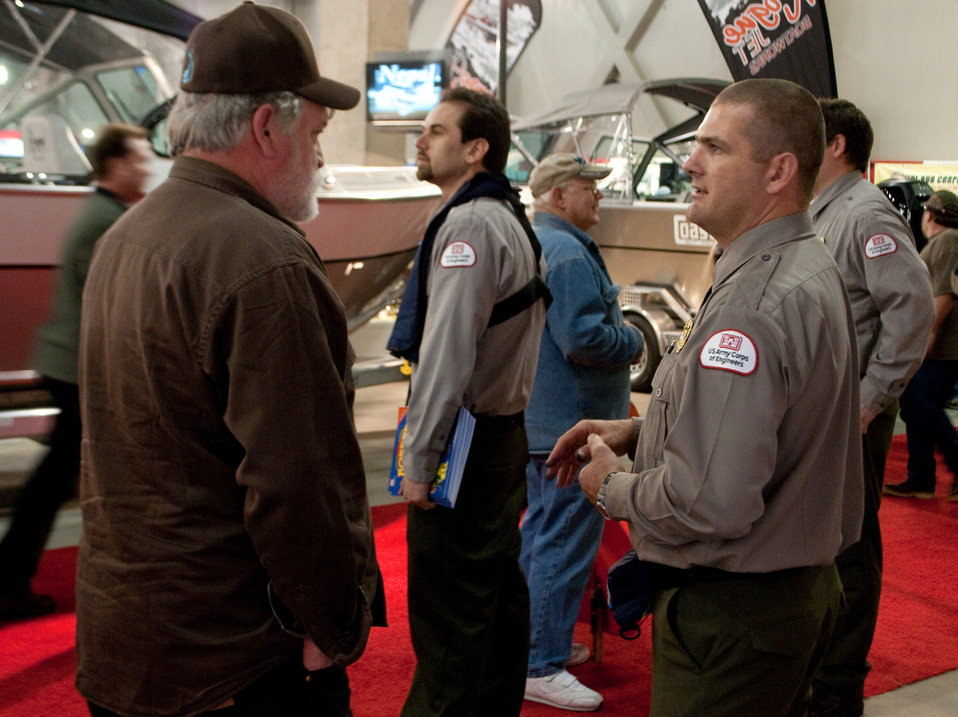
Water safety at the International Sportsmen's Expo

SACRAMENTO, Calif. (Jan. 21, 2011) - U.S. Army Corps of Engineers park ranger Wayne Shull talks boating with a visitor to the International Sportsmen's Expo here Jan. 21. Corps park rangers were on hand at the expo to present water safety tips and recreation opportunities at Corps parks with the more than 40,000 expected event attendees. 'We're out here to let people know about the Corps parks out there,' park ranger Nick Figueroa said, 'and to let them know that we're here to serve.'